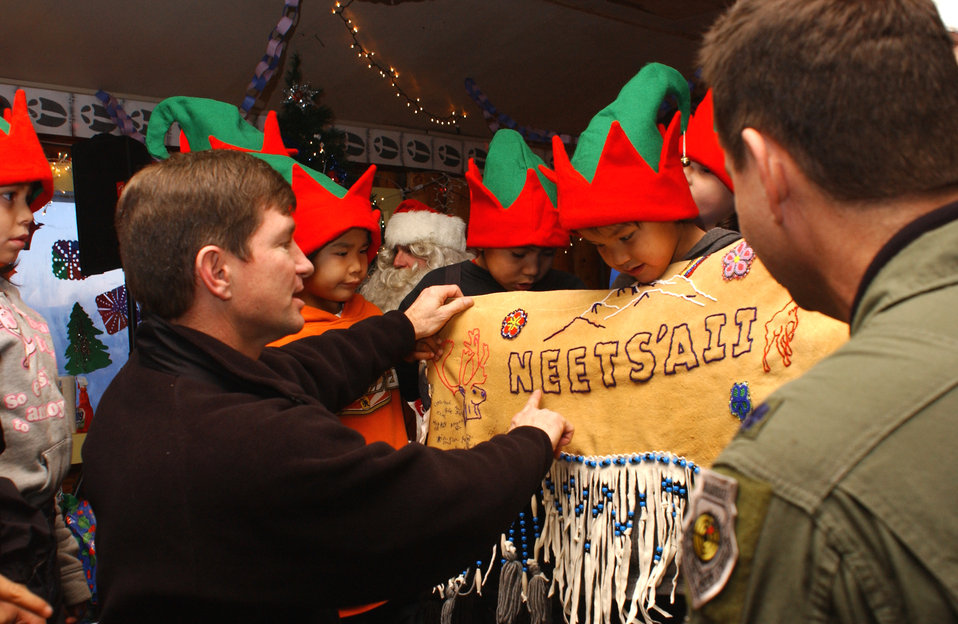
Arctic Village 2006

The 3rd Wing vice commander Colonel Scotty Lewis, accepts a gift from the people of Arctic Village, Alaska. The gift, saying